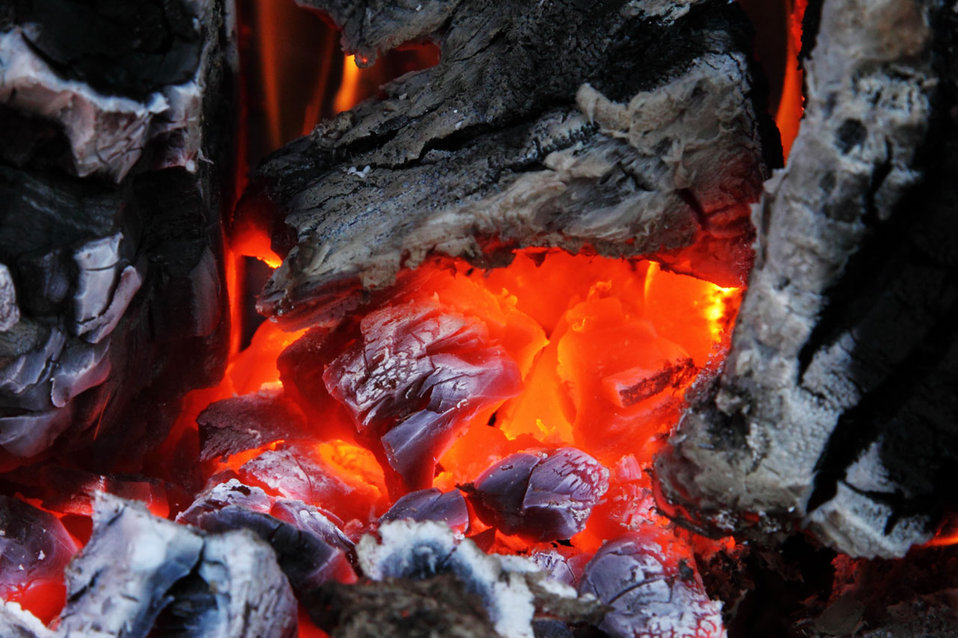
Burning coal

Hot burning charcoal.